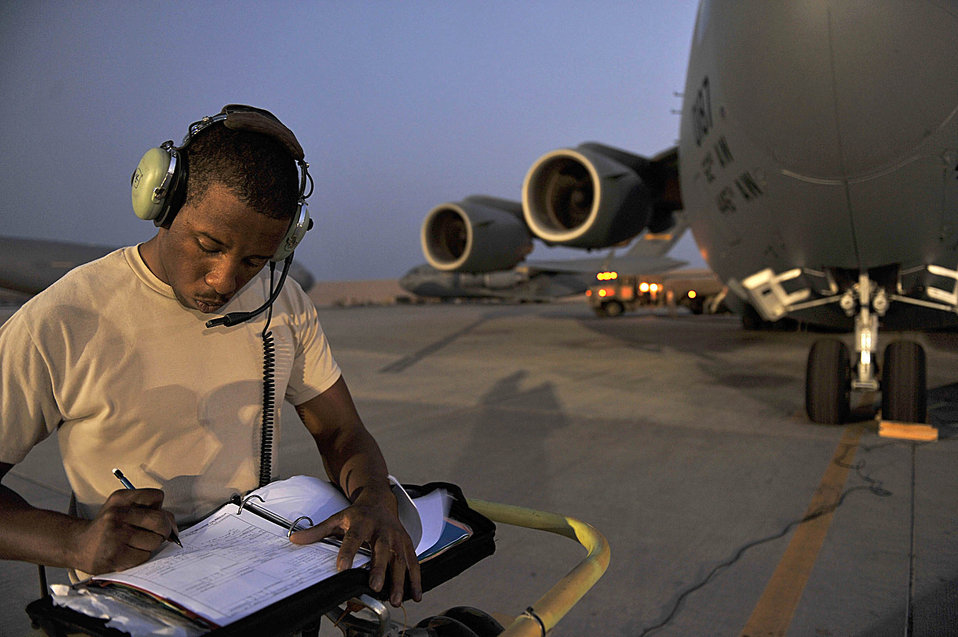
Signing it off

Senior Airman Cecil Bush completes paperwork before a C-17 Globemaster III airdrop May 27, 2010, in Afghanistan. The C-17 crew dropped supplies to a Combined Joint Special Operations Task Force. Airman Bush is assigned to the 8th Expeditionary Aircraft Maintenance Squadron.